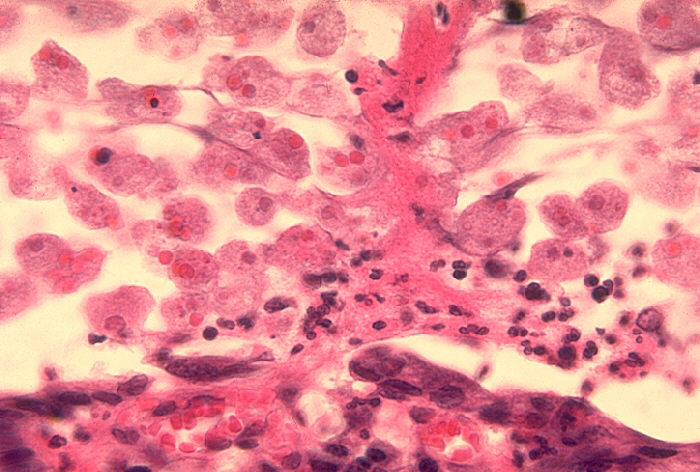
Entamoeba histolytica, intestine. Histopathology.